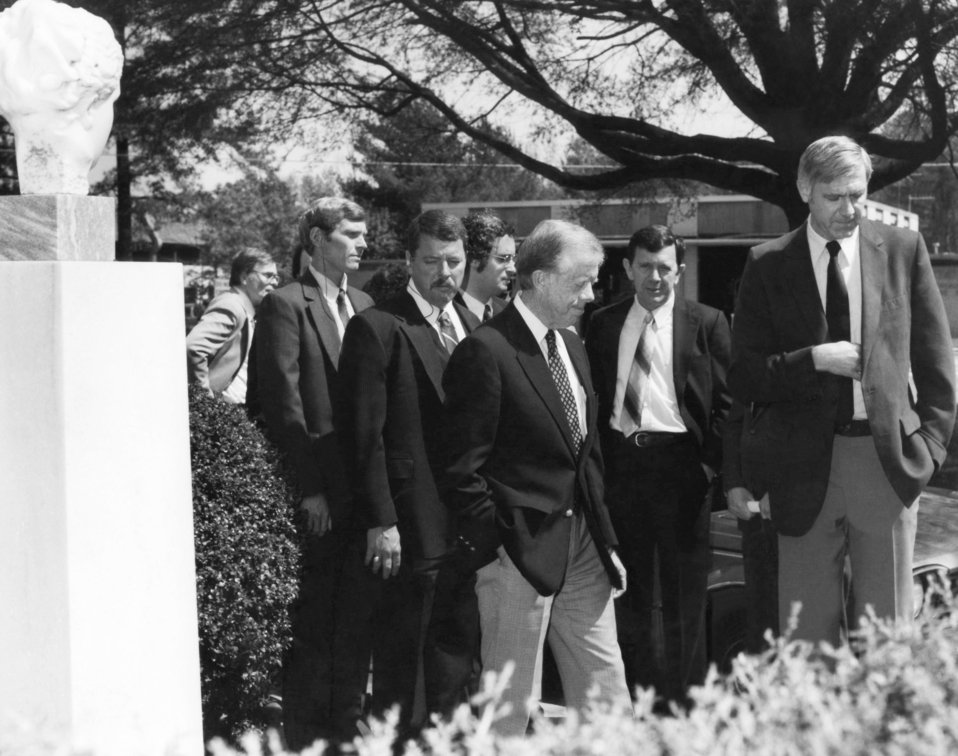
In a 1985 visit to the Centers for Disease Control and Prevention (CDC), former President Jimmy Carter (1977-1981) (center), was shown walking outside of CDC headquarters in Atlanta, Georgia with former CDC Director, Dr. William H. Foege (right). To the far left was a sculptural bust of the Greek Goddess of Health, Hygeia, which still stands in front of the CDC headquarters.